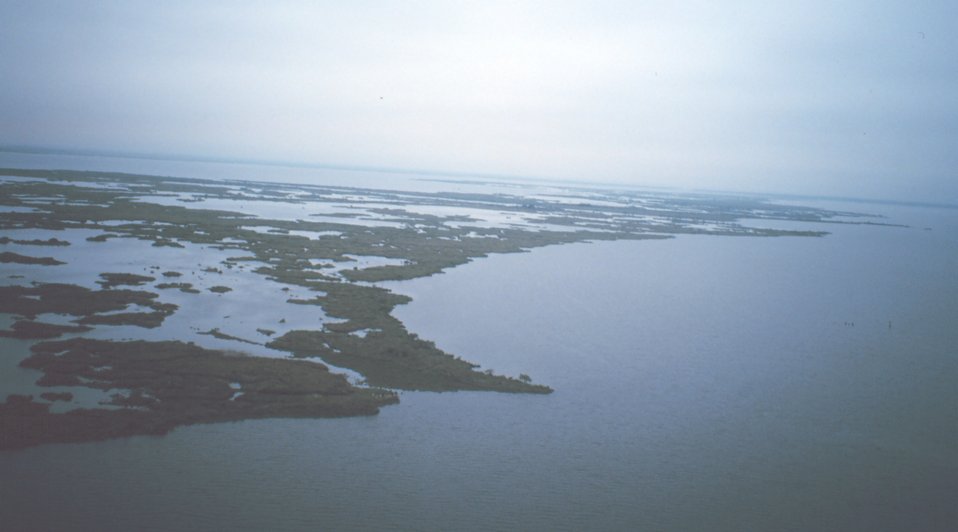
Eroding marsh peninsula between Bayous Perot and Rigolettes